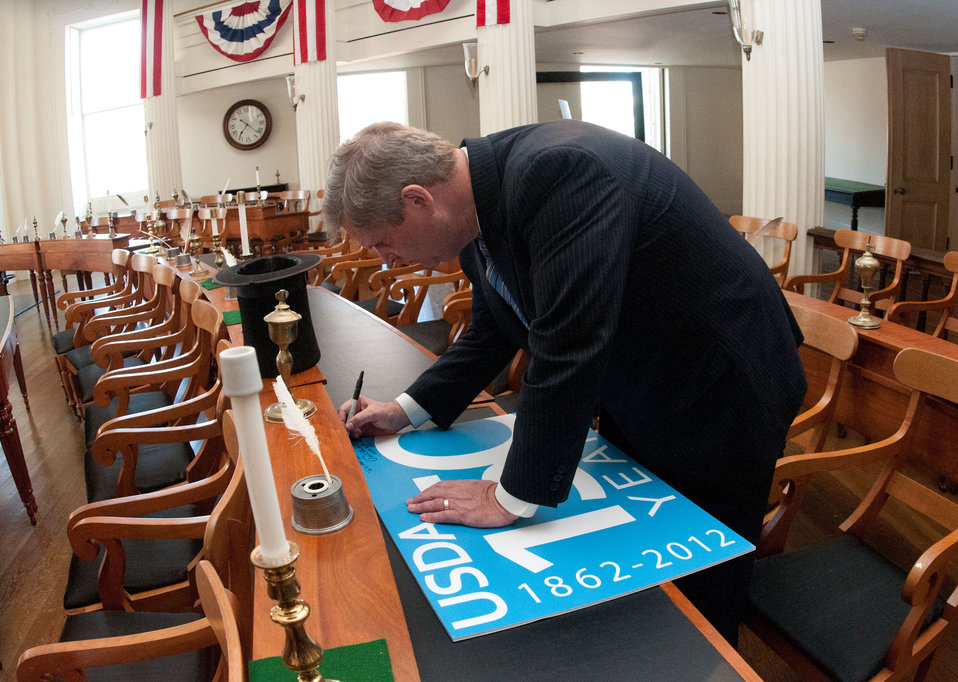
Agriculture Secretary Tom Vilsack signs the display board with the 150th Anniversary graphic that commemorates the 150th Anniversary of the creation of the U.S. Department of Agriculture on Wednesday, November 2, 2011, at the Old State Capitol in Springfield, IL. The stovepipe hat next to the board indicates Abraham Lincoln’s seat in Representative Hall. The board immediately became an archive item on display in the Old State Capitol.